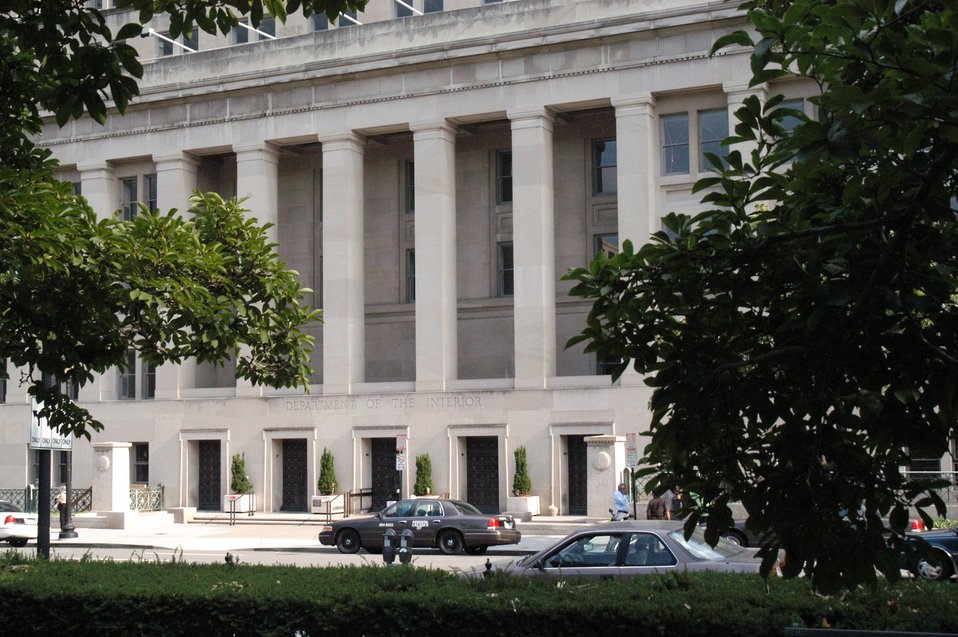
Department of the Interior building in Washington DC on 1849 C Street N.W. Photo by Tom Iraci, July 2004.